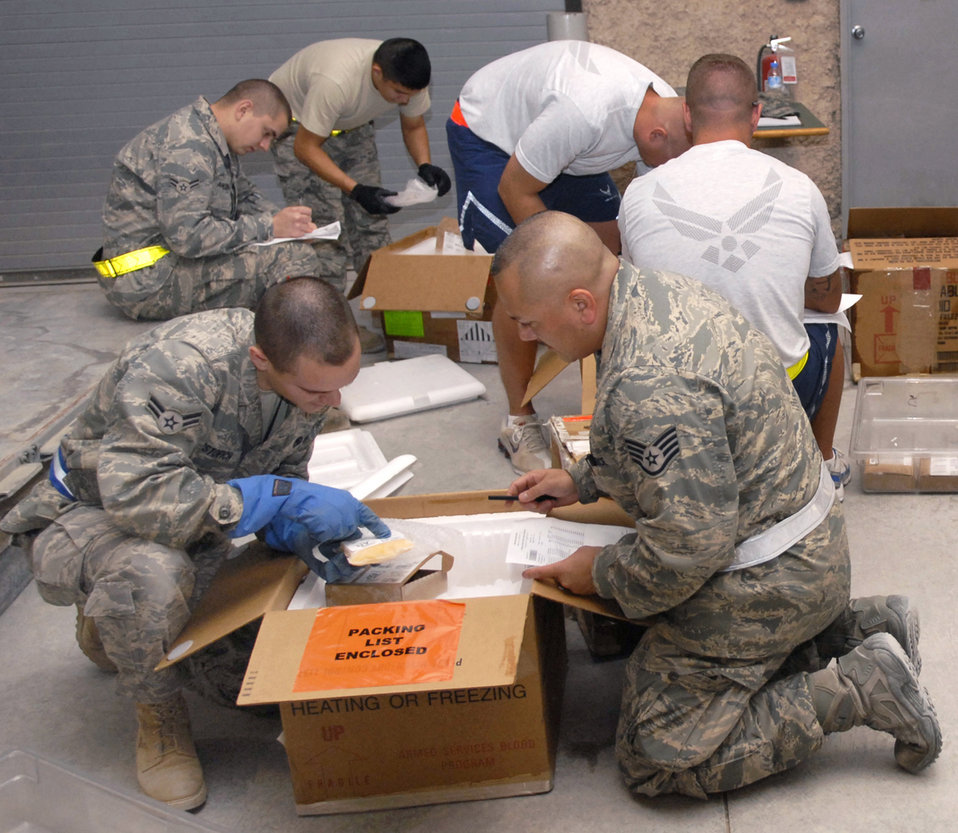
Blood Transshipment Center

Volunteers at this air base in Southwest Asia assist the 379th Expeditionary Medical Group Blood Transshipment Center staff May 9 with inventorying incoming blood products to ensure they are ready to be distributed throughout the U.S. Central Command area of operation.